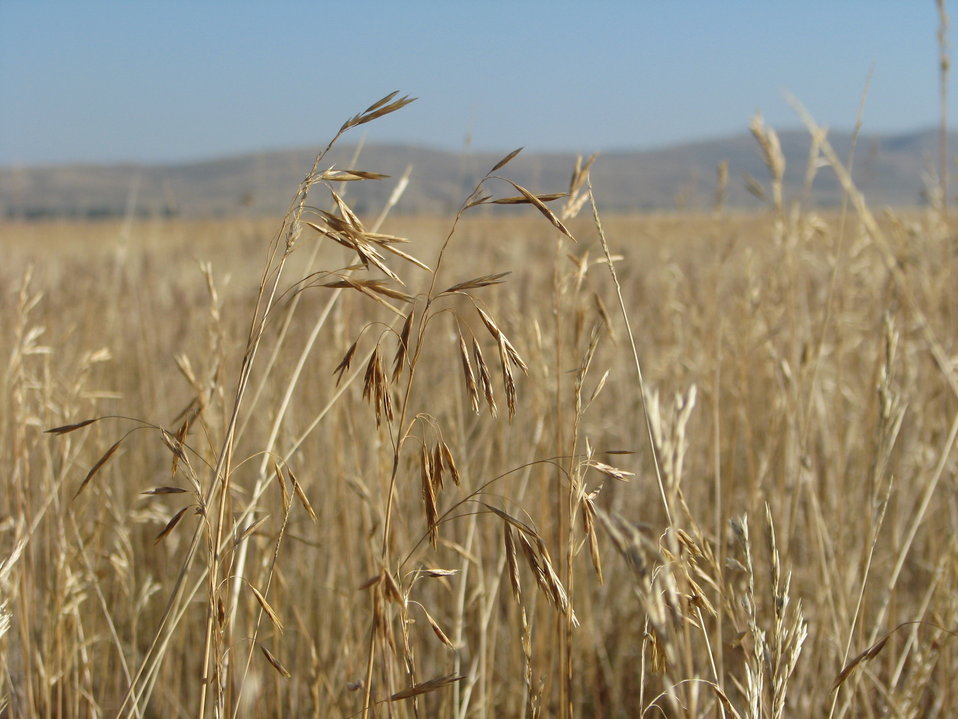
One Type of Perennial Grass

Smooth brome is just one of the types of grasses that grows on the National Elk Refuge. The plant type was more common earlier in the refuge's history when hay was grown and used as the primary source of supplemental feed. Today, refuge staff purchases and distributes pelletized alfalfa when supplemental feeding is needed.